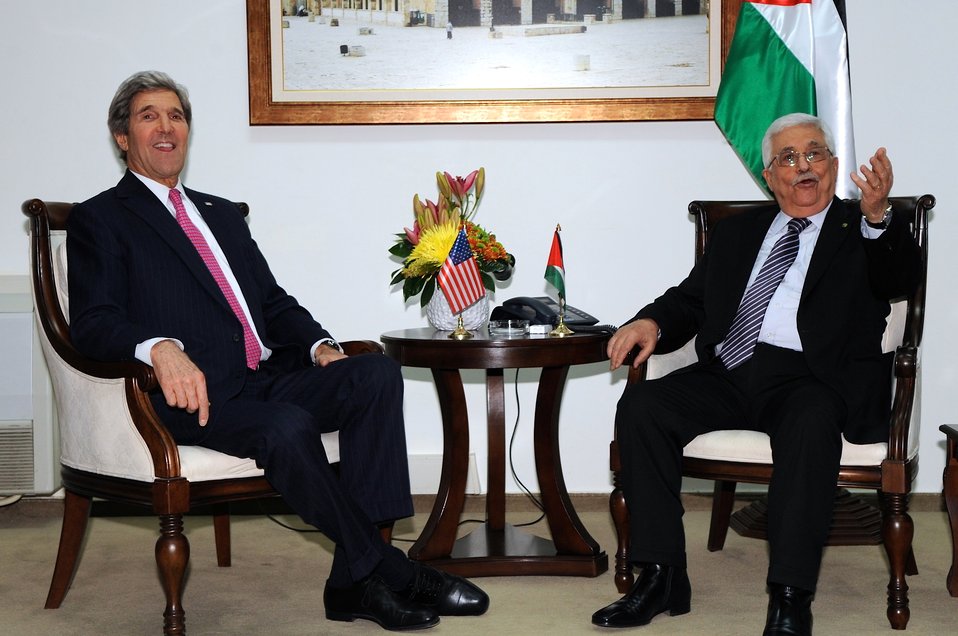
President Abbas Meets With Secretary Kerry in West Bank

Palestinian Authority President Mahmoud Abbas speaks to some of his aides before the start of a meeting with U.S. Secretary of State John Kerry focused on Middle East peace at the Muqata'a Presidential Compound in Ramallah, West Bank, on January 4, 2013.